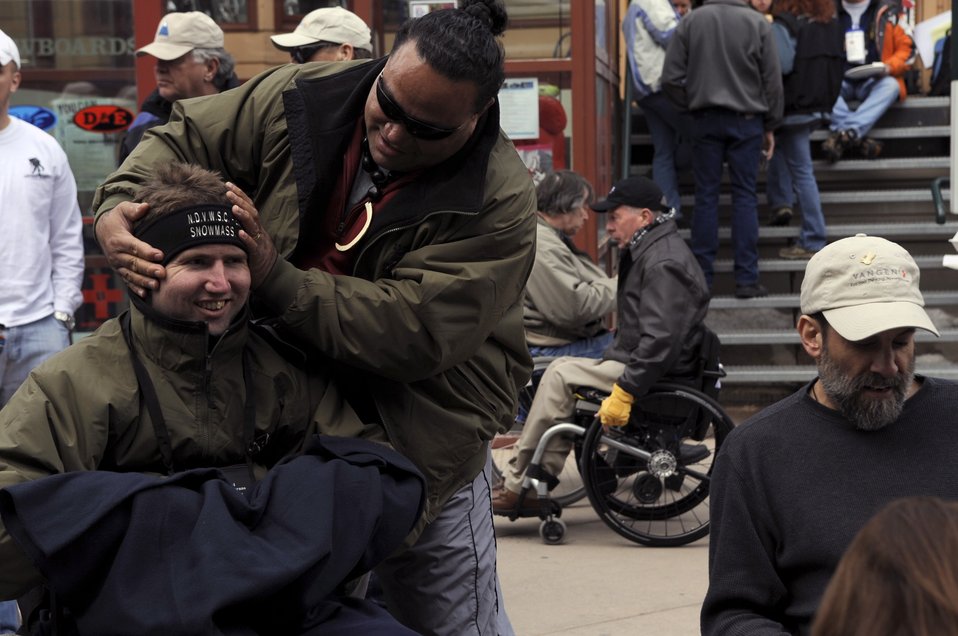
Winter rehabilitation clinic shows veterans potential